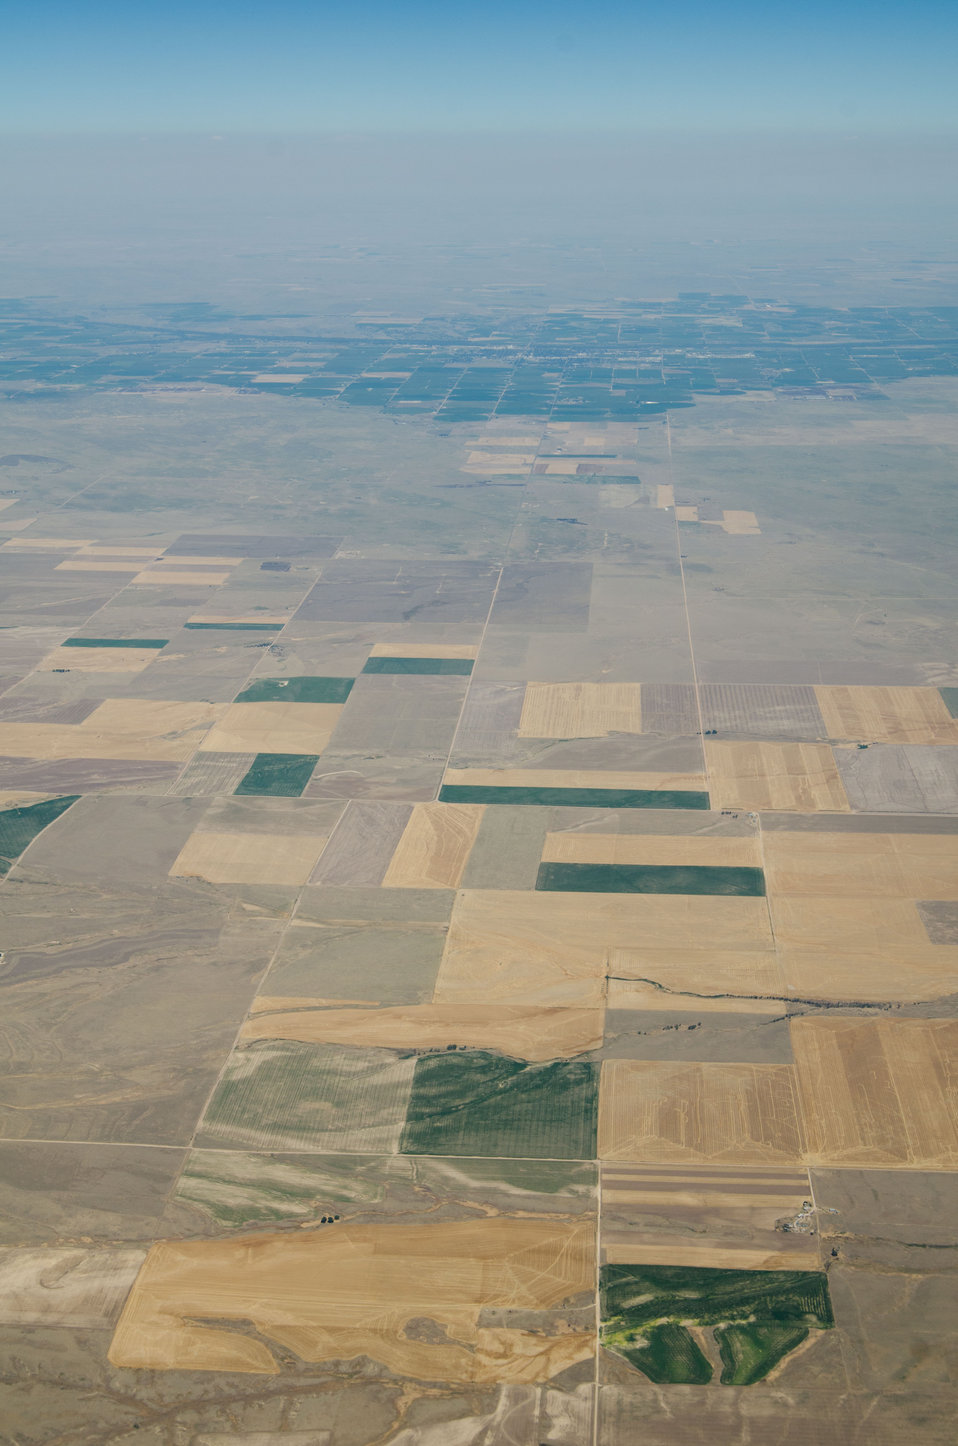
Aerial views of drought affected Colorado farm lands, 107 miles east of Denver, Colorado on Saturday, July 21, 2012. Green areas are irrigated, the yellow areas are dryland wheat crops.